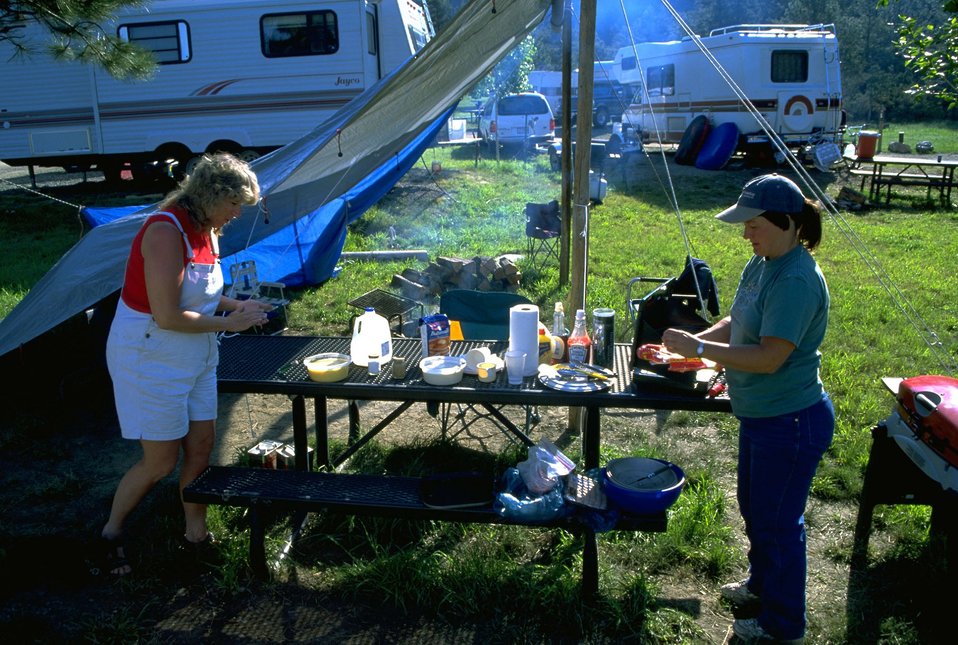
Fixing dinner at Log Gulch Campground